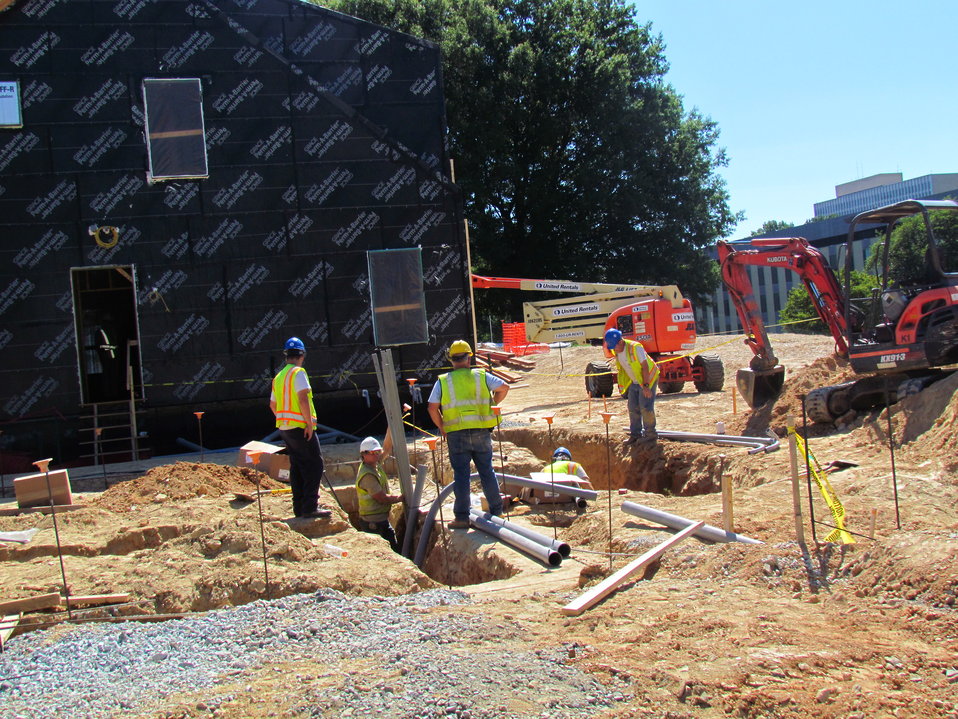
Net-Zero Energy Residential Test Facility - Photo showing preparation of footings for garage.